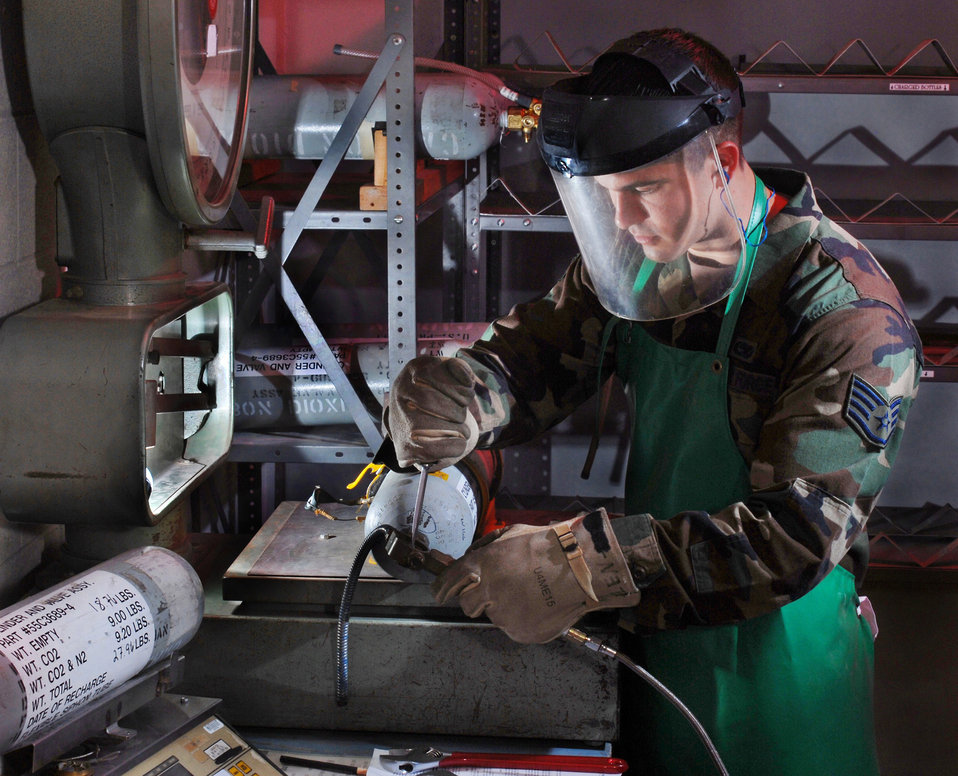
Recharging the tank

Staff Sgt. Jeff Gomez prepares to recharge the carbon dioxide bottle of a 20-person life raft of a KC-135 Stratotanker during a periodic inspection at March Air Reserve Base, Calif. Sergeant Gomez is an electrical and environmental technician from the 452nd Maintenance Squadron.